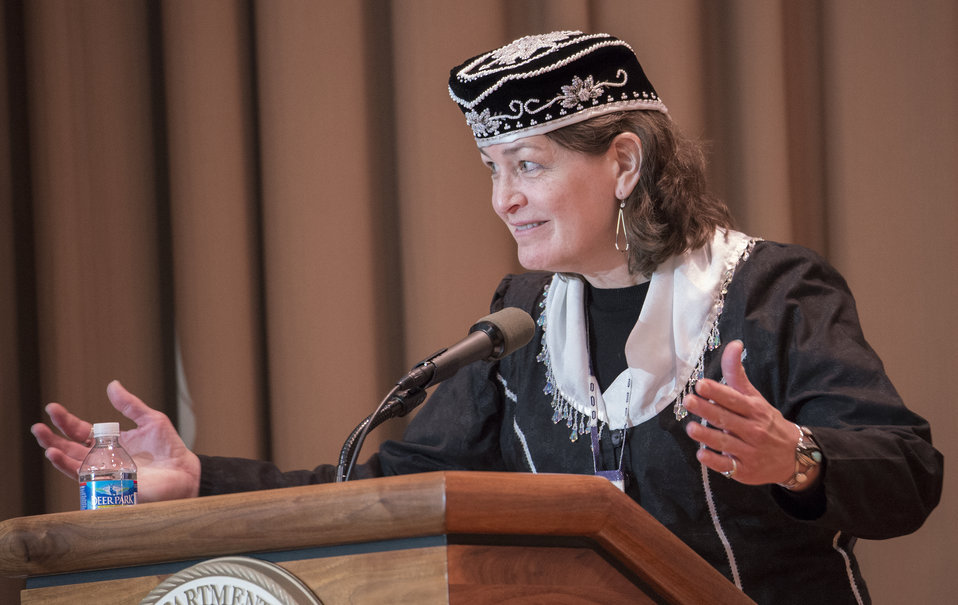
U.S. Department of Agriculture (USDA) Office of Tribal Relations (OTR) Director Onieda Nation of Wisconsin Leslie Wheelock speaks at the 2013 American Indian and Alaska Native Heritage Observance at the USDA on Thursday, Nov. 14, 2013 in Washington, D.C. The theme of this year’s event was “Guiding Our Destiny with Heritage and Traditions.”